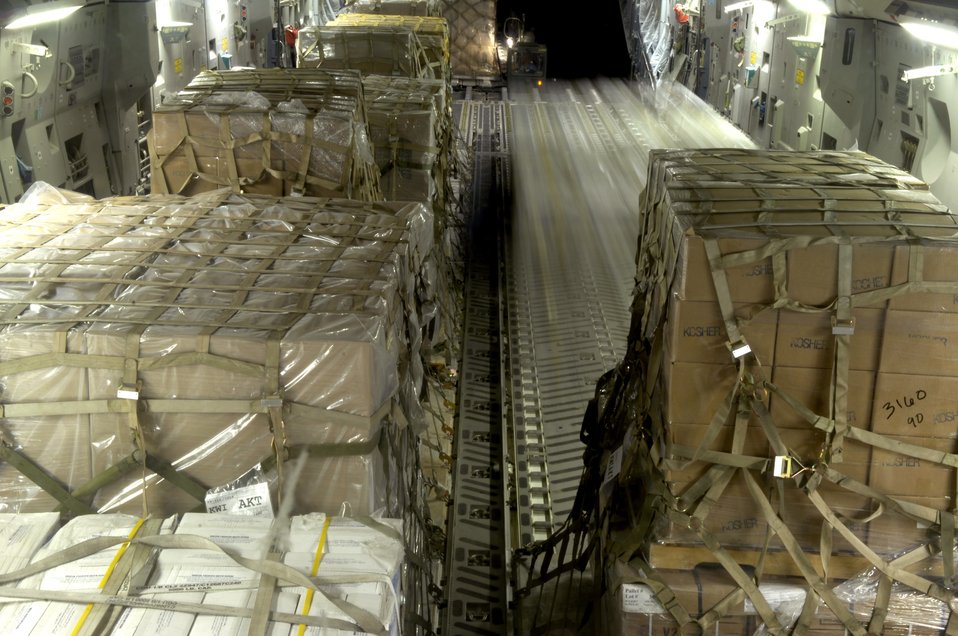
Supplies bound for Cyprus

Pallets are loaded onto a C-17 Globemaster III in Southwest Asia for transport to Cyprus on July 22. C-17 crews from the 816th Expeditionary Airlift Squadron are filling their cabins with pallets of supplies such as water, Meals, Ready to Eat and cots for the American citizens leaving Lebanon. This C-17 transported 17 pallets, about 64,000 pounds, of cargo to Cyprus on this mission.